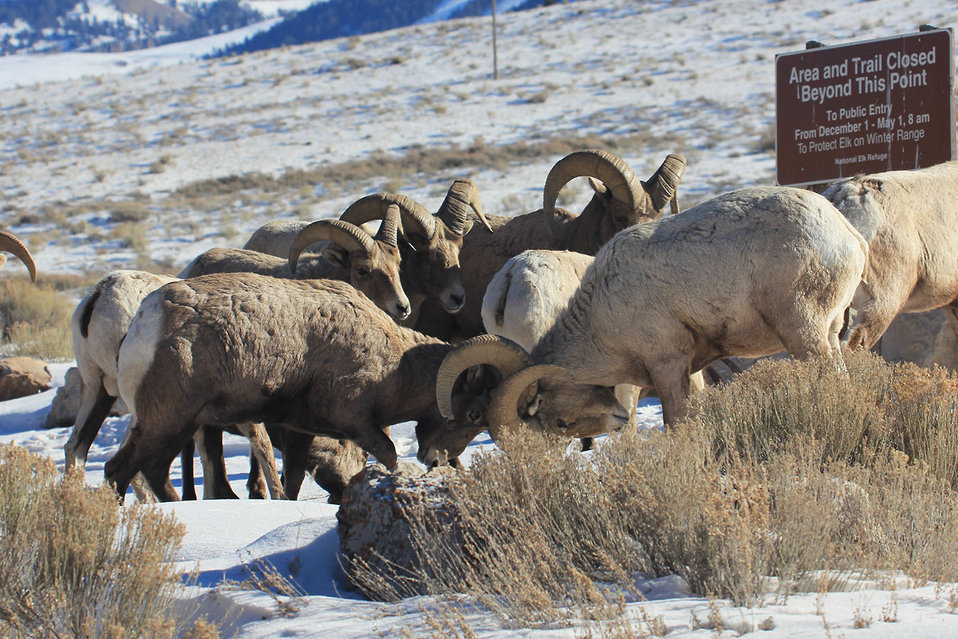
Butting Heads

Two bighorn sheep butt heads while others look on.

Credit: USFWS / Ann Hough, National Elk Refuge volunteer